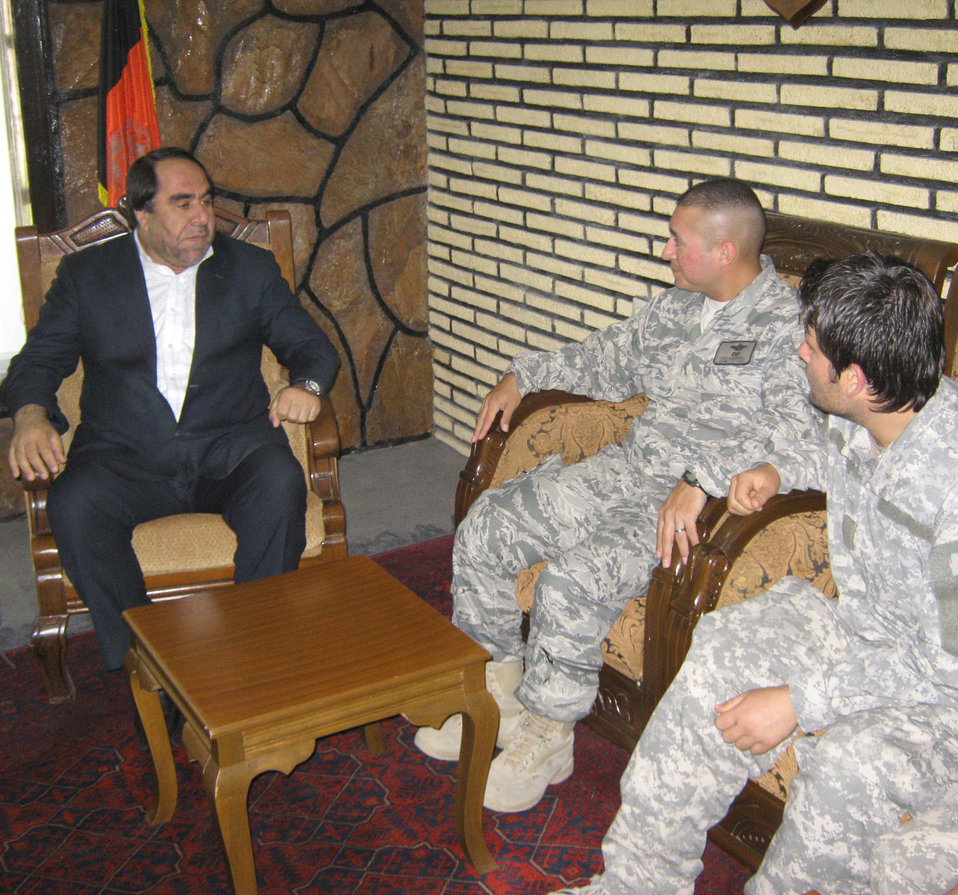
PRT project could bring 35,000 new trees to Panjshir province

Panjshir Gov. Keramuddin Keram (left) talks with Lt. Col. Curtis Velasquez July 1, 2010 about a project that could bring 35,000 new trees into the province by the end of the year. Colonel Velasquez is the Provincial Reconstruction Team Panjshir commander.